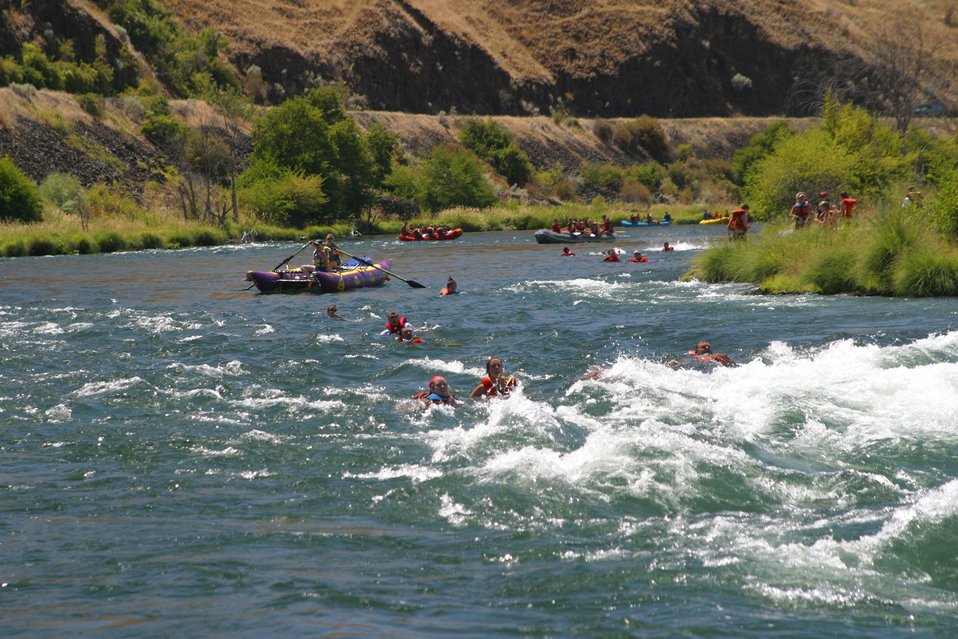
Elevator Rapids near Mile 46 on the Lower Deshcutes River. 7/26/03 Pelton Dam 3600 cfs: Moody Rapids 4300 cfs.